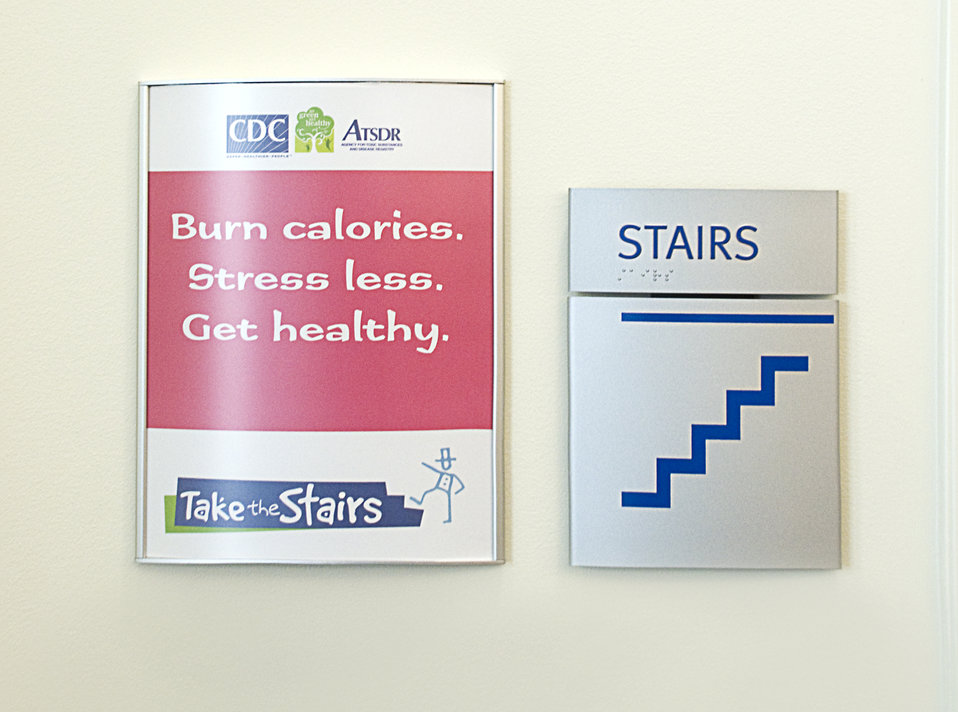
Here are two examples of signs placed throughout the facilities of the Centers for Disease Control (CDC) in Atlanta, Georgia, encouraging employees and vistors to make use of the stairways instead of using mechanized means of transport, i.e., elevators.